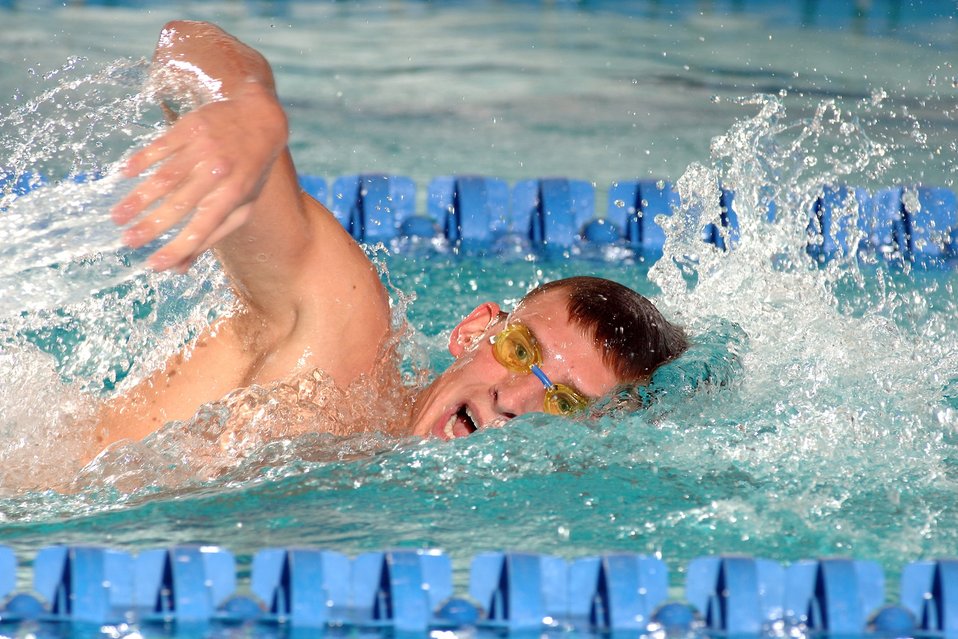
Academy cadet earns third conference honor

Cadet Chris Knaute, an Air Force Academy senior, was named Mountain West Conference men's swimmer of the week Jan. 24 by the conference office. This is his third honor this season and seventh of his career.